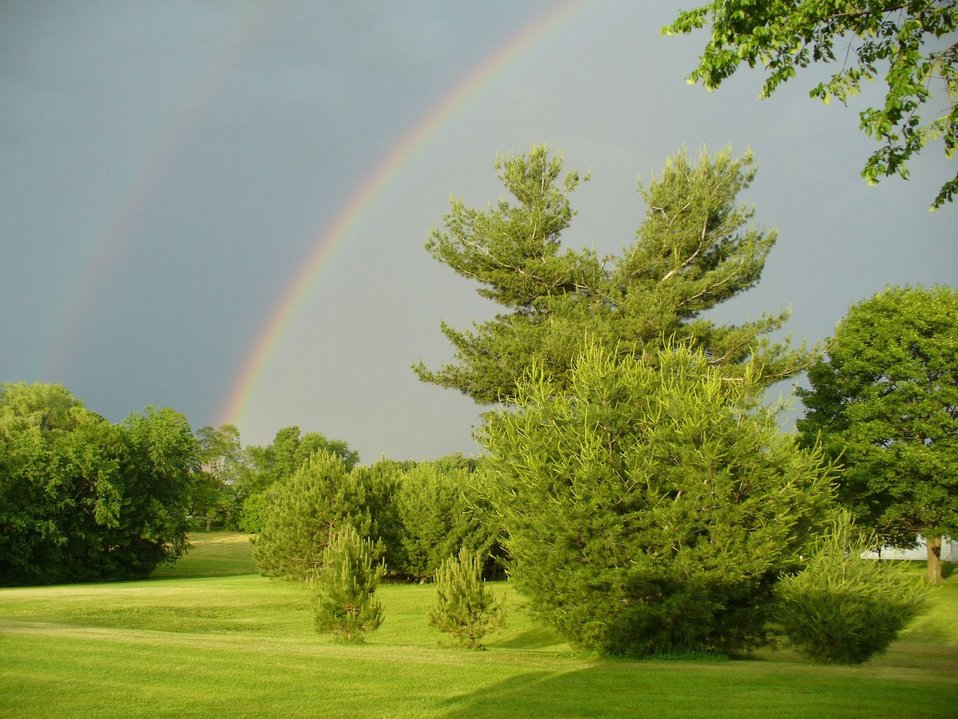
Uploaded by request of Nancy Regels

Taken in Duanesburg, NY

This picture was taken in my backyard, which I call 'heaven'. I live somewhat in the country but not too far out.